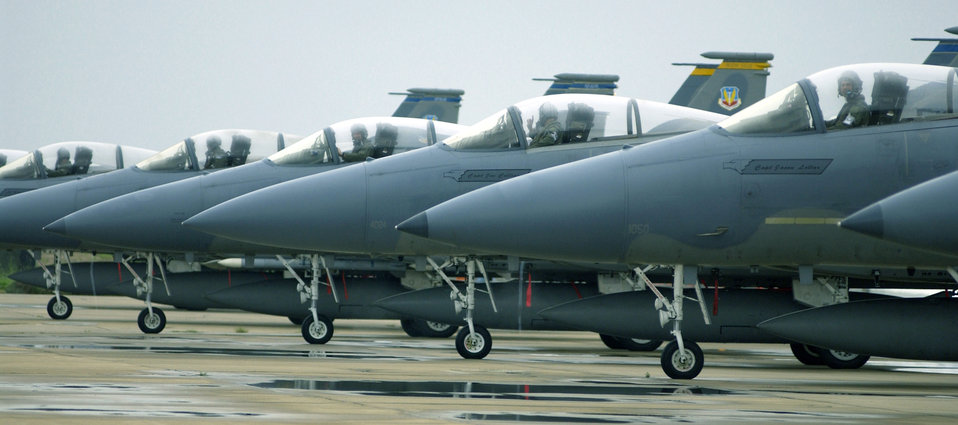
Eagle formation

LANGLEY AIR FORCE BASE, Va. – A formation of F-15 Eagle fighter aircraft line up on the flightline during a Phase 1 Operational Readiness Inspection here Aug. 12.